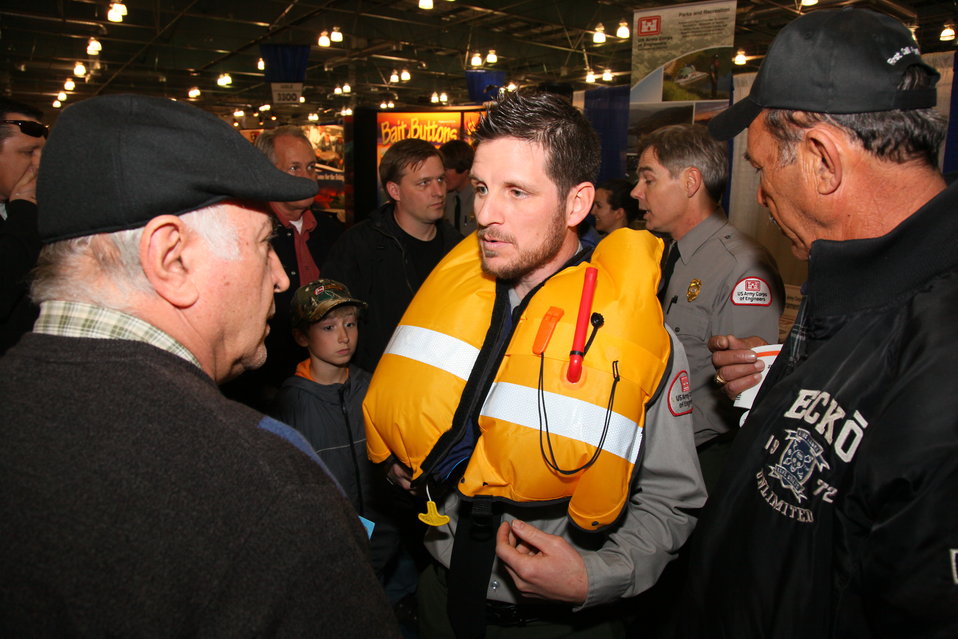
Corps park rangers promote water safety at the 2012 Sportsmen’s Expo

U.S. Army Corps of Engineers park ranger Josh Jimerfield (center) demonstrates an inflatable life jacket and talks about water safety with visitors to the International Sportsmen’s Exposition in Sacramento, Calif., Jan. 20, 2012. Corps park rangers were on hand at the event to present and promote water safety tips and recreation opportunities at Corps parks.